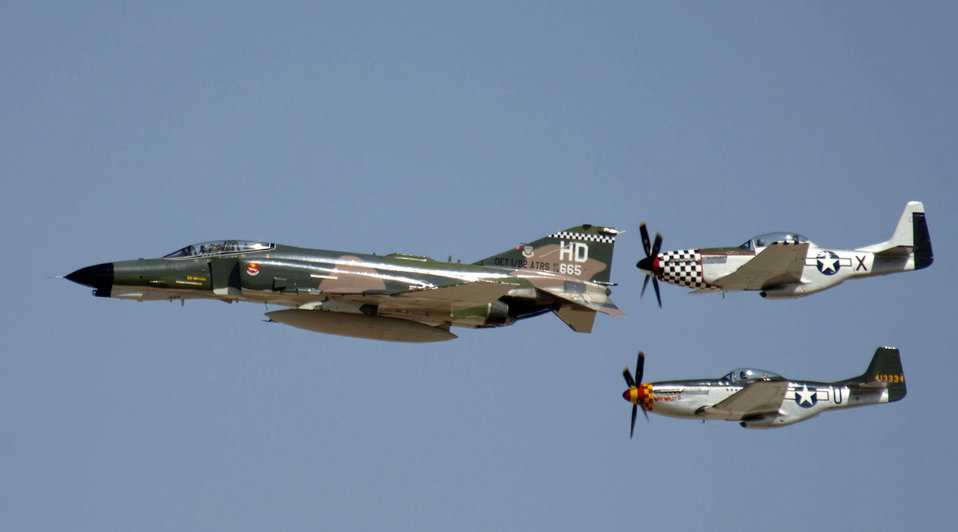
Heritage Conference mixes old with new

An F-4 Phantom II and two P-51 Mustangs demonstrate aerial capabilities March 3 during the 2007 Heritage Conference at Davis-Monthan Air Force Base, Ariz. The conference provides an opportunity for Air Combat Command demonstration pilots to train together with modern and historic military aircraft in preparation for the upcoming air-show season.